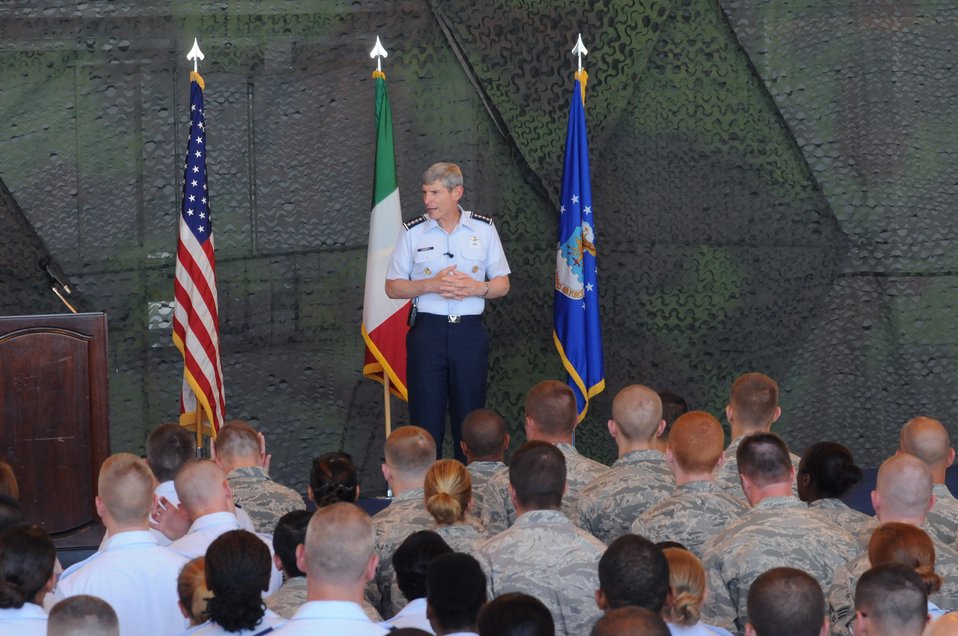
Chief of staff and spouse visit Aviano Air Base

Air Force Chief of Staff Gen. Norton Schwartz addresses Airmen during an all call at Aviano Air Base, Italy, on July 11, 2011. The general and his wife Suzie were visiting Aviano to meet with Airmen and their families and observe the installation’s mission. During his remarks, the general praised 31st Fighter Wing personnel for their achievements in operations, deployments and inspections.